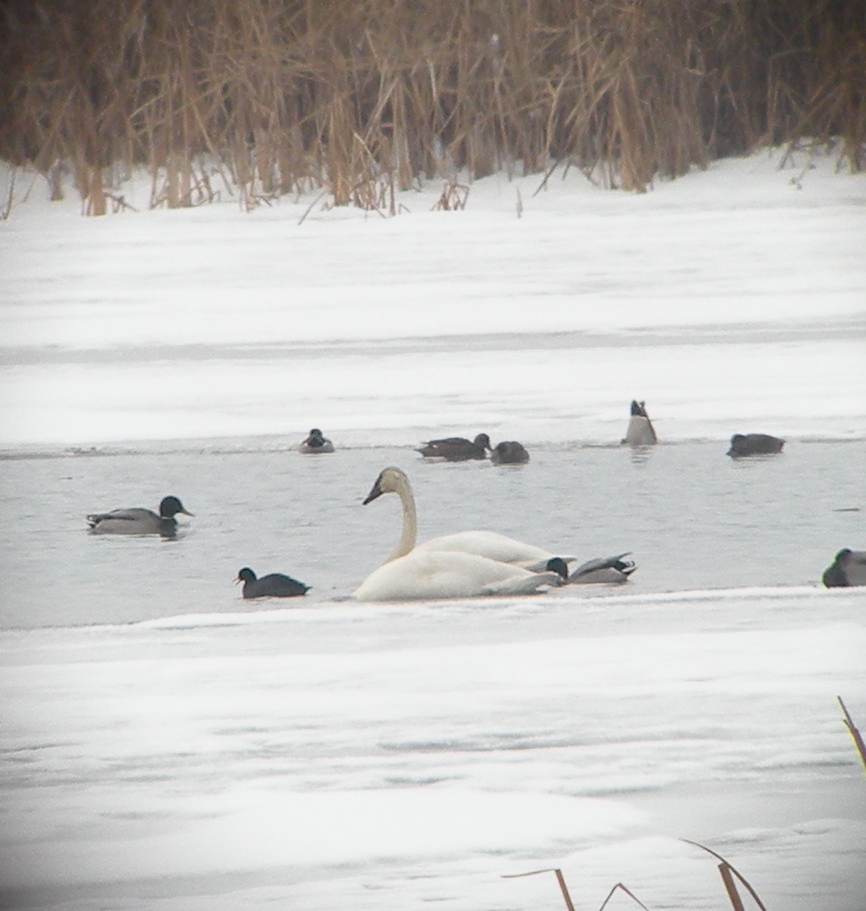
Trumpeter Swans at Lee Metcalf NWR

This pair of trumpeter swans feeding in Pond 5 make a great viewing opportunity while driving on Wildfowl Lane.